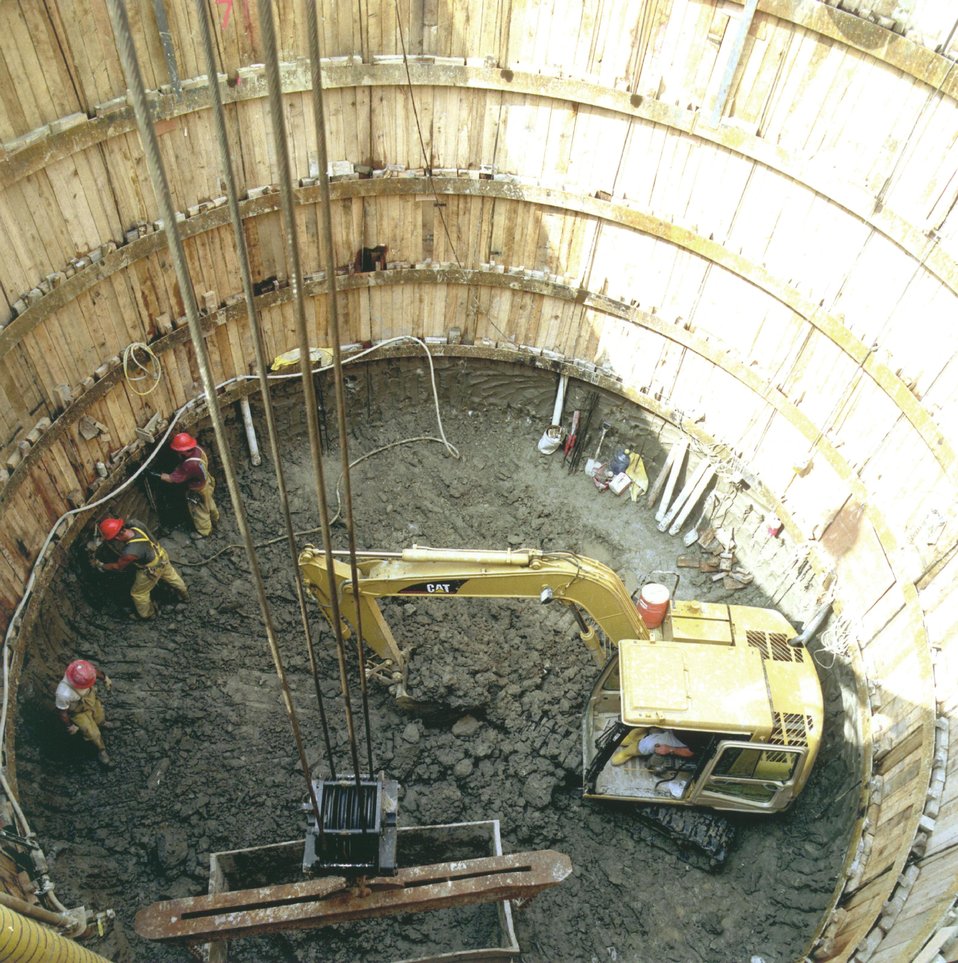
THIS IS ONE OF THREE SHAFTS, THE DEEPEST, AT 350 FEET, BEING EXCAVATED FOR THE NUMI PROJECT AT FERMI.

SINCE MARCH 2000 AN UNDERGROUND SYSTEMS OF HALLS, SHAFTS AND TUNNELS HAVE BEEN DUG FOR THE NEUTRINOS AT THE MAIN INJECTOR PROJECT. THIS NUMI CONSTRUCTION IS THE FIRST STEP TOWARD BUILDING AN EXPERIMENT AT FERMI THAT WILL DETERMINE WHETHER NEUTRINOS, WHICH ARE GHOST-LIKE PARTICLES TRAVERSING THROUGH THE UNIVERSE AT OR NEAR THE SPEED OF LIGHT, HAVE ANY MASS.